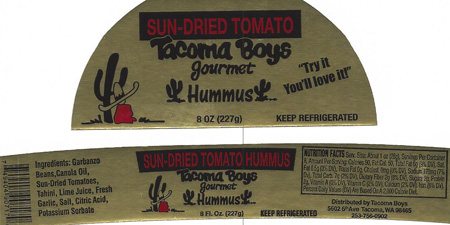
RECALLED – Hummus

July 16, 2013 – Product Recall – Hagee Foods Inc. dba Penny's Salsa Inc. Recalls Hummus Products Because of Possible Health Risk.